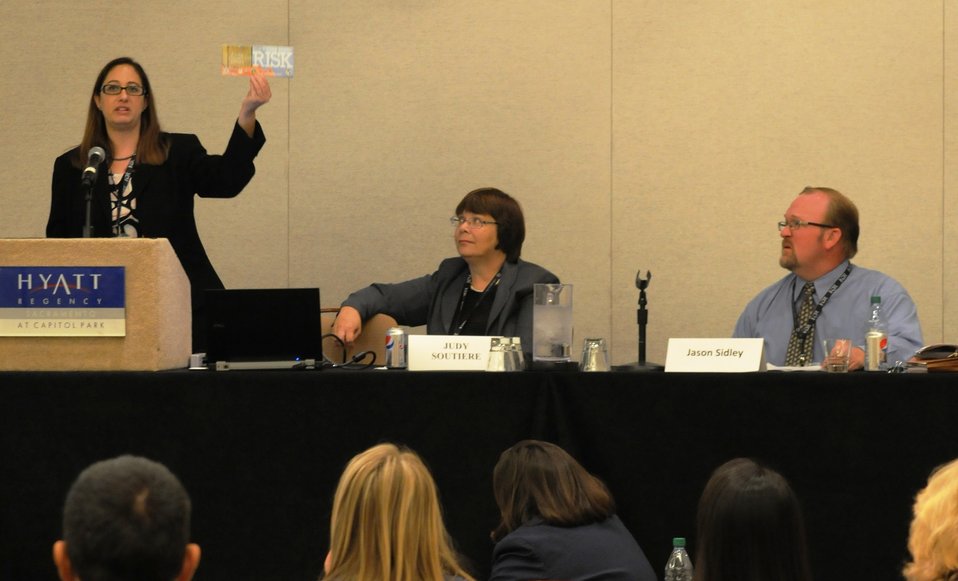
Floodplain Management Association conference 2012

U.S. Army Corps of Engineers Sacramento District water resource planner Kim Carsell (left) and Jason Sidley with the California Department of Water Resources (right) describe the need for public and elected official education regarding flood consequences throughout the state, at the Floodplain Management Association’s annual conference, held in Sacramento, Calif., Sept. 4-7, 2012. “Everyone in California is at risk – whether or not you live in a floodplain,” said Carsell, “and the impact of a devastating flood here will reach far beyond the state’s boundaries.”